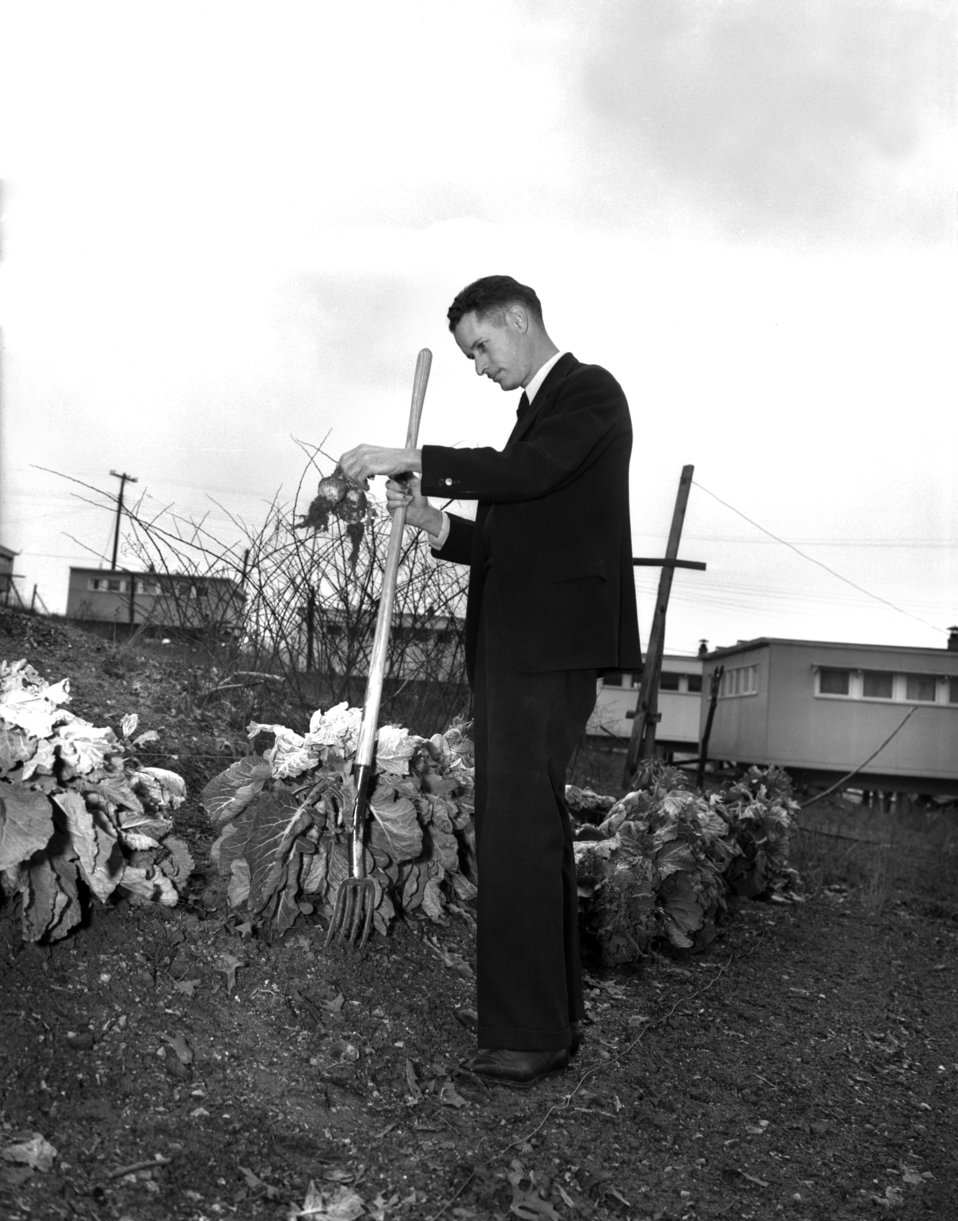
H.M. Bunke in Garden Oak Ridge

3340-2 DOE photo Ed westcott 3-15-1947 Oak Ridge Tennessee